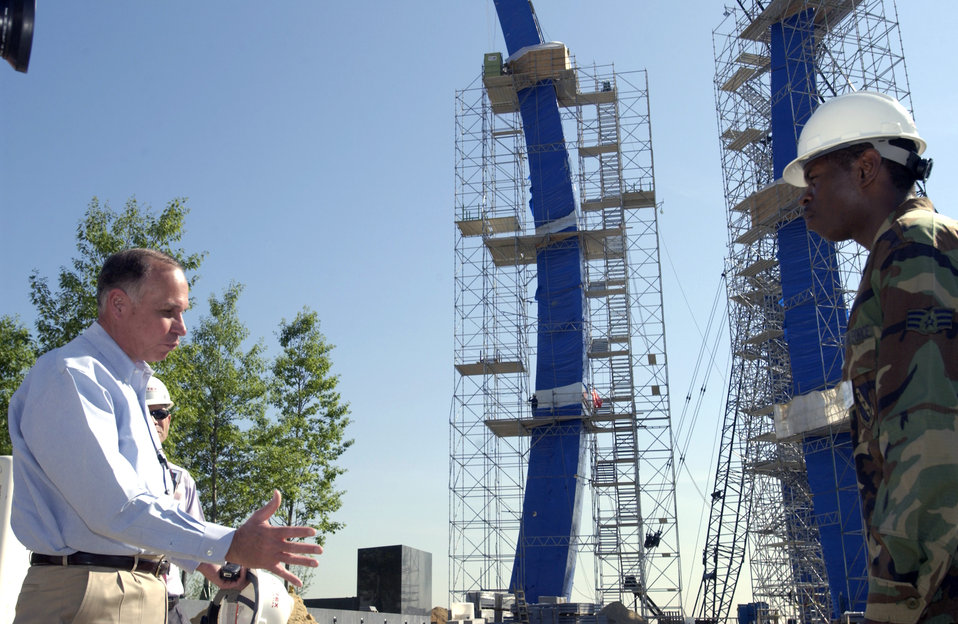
Air Force Memorial progress 'wows' Airmen

Retired Maj. Gen. Edward F. Grillo Jr. talks with Senior Airman Henry Hargrove about the importance of the new Air Force Memorial and what it will mean to past, present and future Airmen. The memorial is scheduled to be completed in October. Its three spires represent the Air Force core values. General Grillo is president of the Air Force Memorial Foundation. Airman Hargrove is assigned to the 11th Logistics Readiness Squadron at Bolling Air Force Base in Washington, D. C.